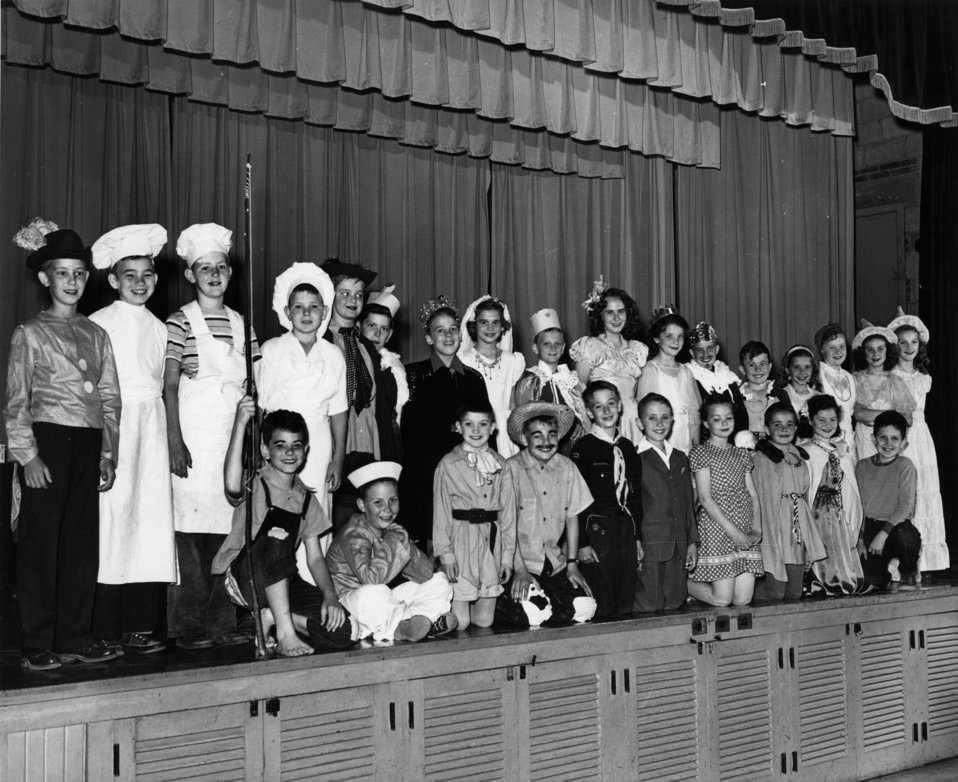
Elm Grove School play Oak Ridge 1948

4461-2 DOE photo Ed Westcott 4/16/48
Oak Ridge Tennessee